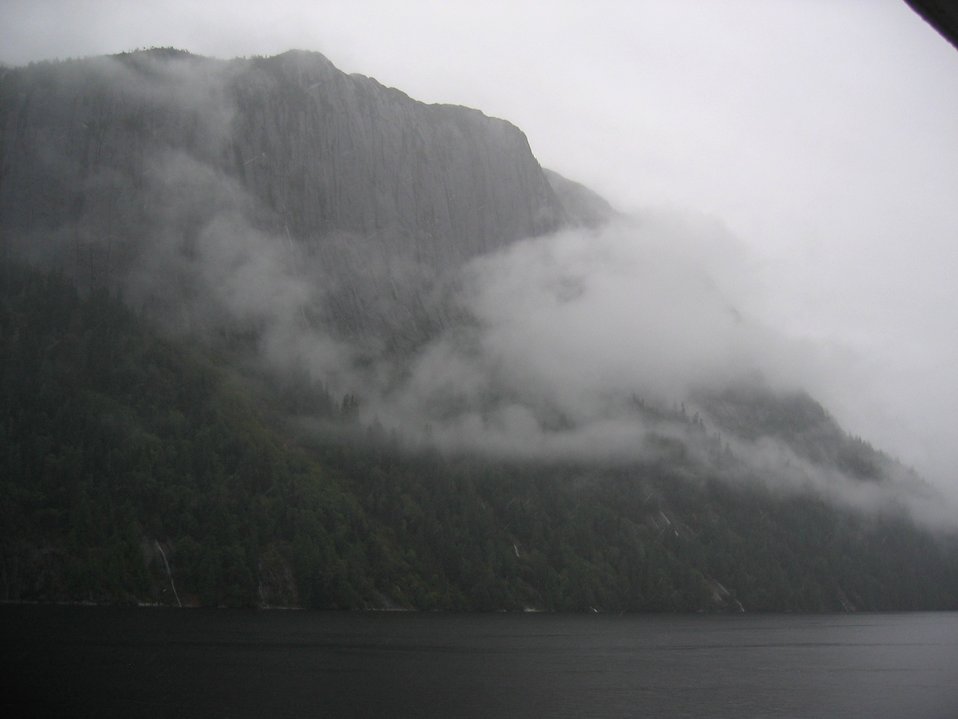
Precipitous cliffs, narrow waterways in the mist.